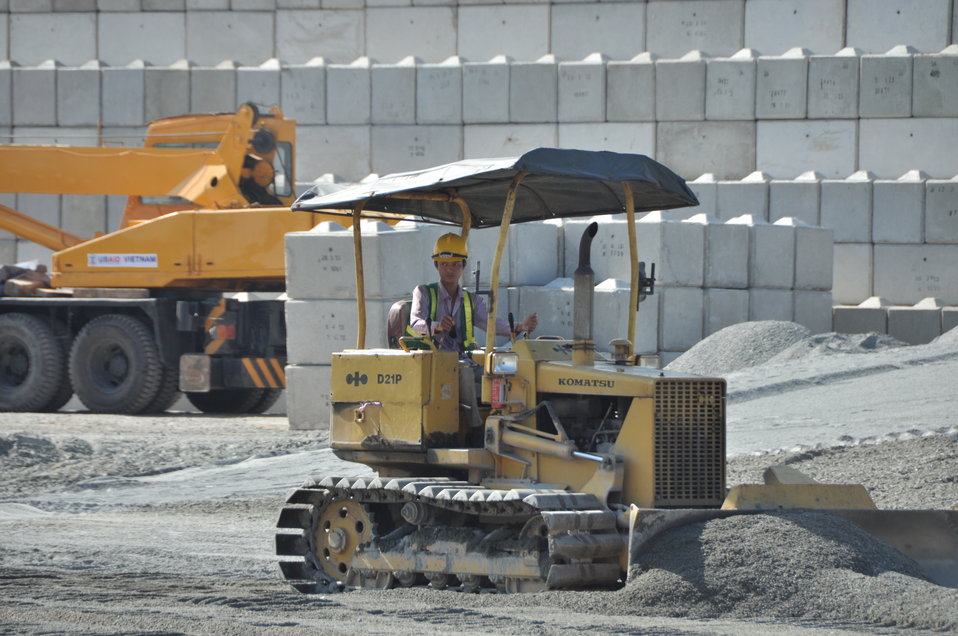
Site construction at the Environmental Remediation of Dioxin Contamination at Danang Airport

Progress at the Danang Airport remediation site
April 23, 2013